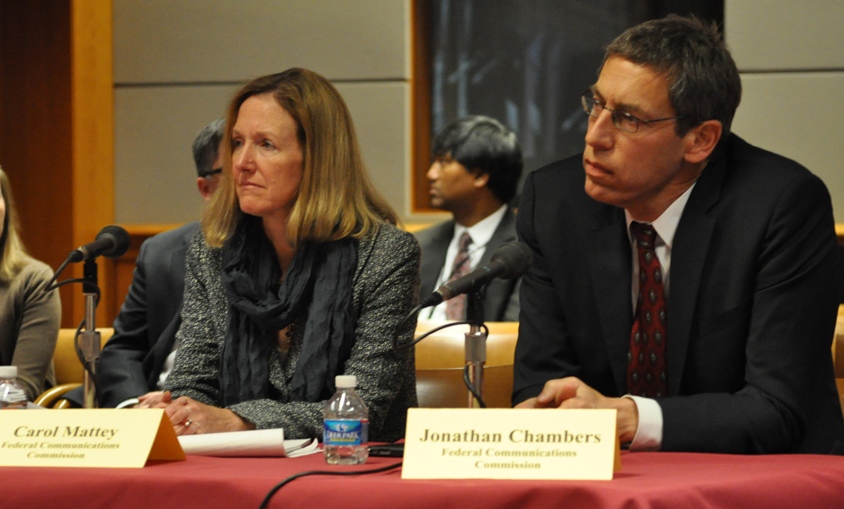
Rural Broadband Workshop: March 19, 2014

Moderators for Panel 2: Rural Broadband Buildout - Effective Strategies & Lessons Learned